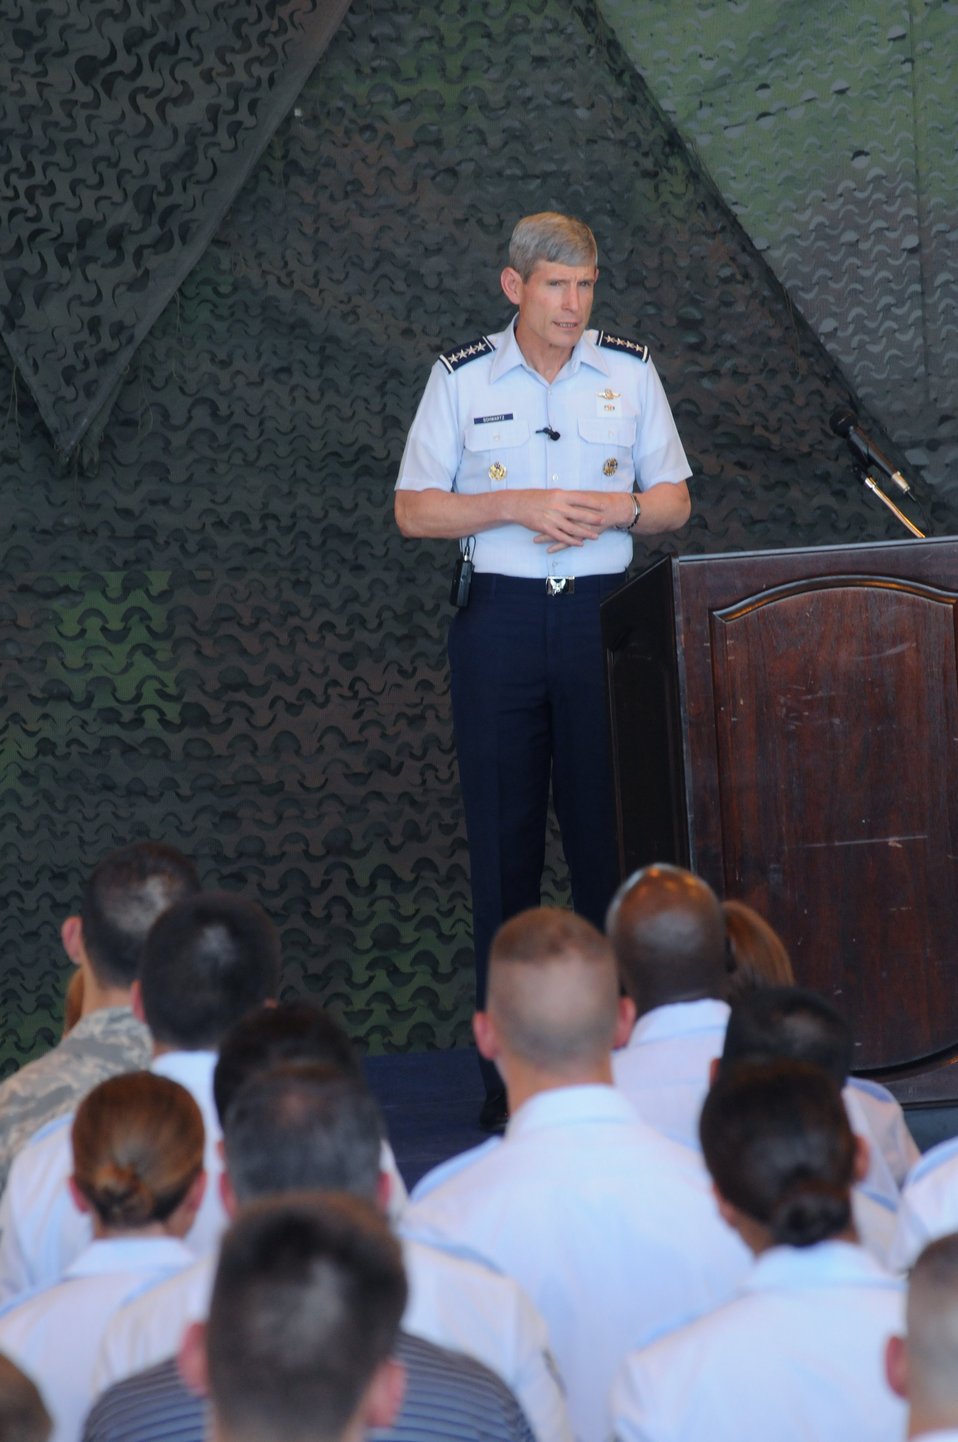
Chief of staff and spouse visit Aviano Air Base

Air Force Chief of Staff Gen. Norton Schwartz addresses Airmen during an all call at Aviano Air Base, Italy, on July 11, 2011. The general and his wife Suzie were visiting Aviano to meet with Airmen and their families and observe the installation’s mission. During his remarks, the general praised 31st Fighter Wing personnel for their achievements in operations, deployments and inspections.